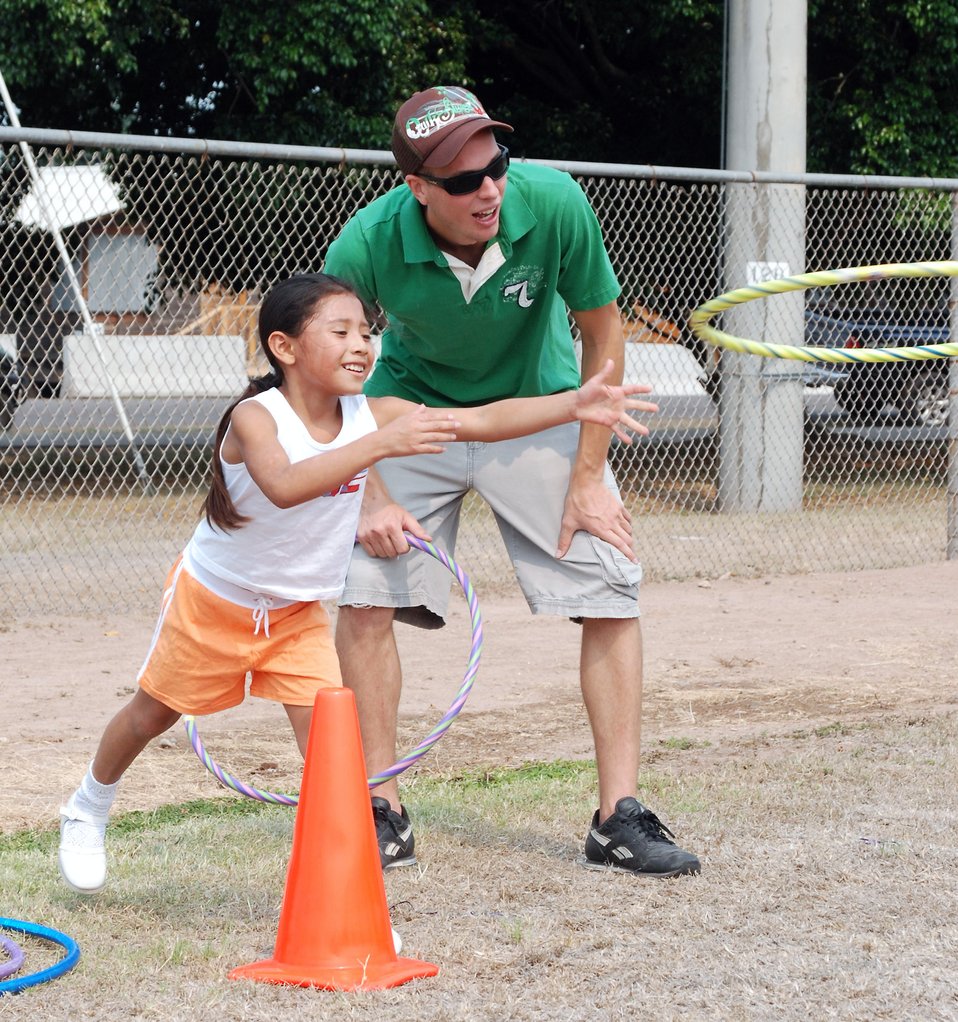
Airmen in Honduras host special day for local children

Senior Airman George Schaultz plays a hoop toss game with a girl from the Hogar de Guadalupe Orphanage during kids' day May 18 at Soto Cano Air Base, Honduras. About 40 volunteers from the 612th Air Base Squadron gave the children a care-free day of fun and activities. Airman Schaultz is assigned to the 612th ABS.